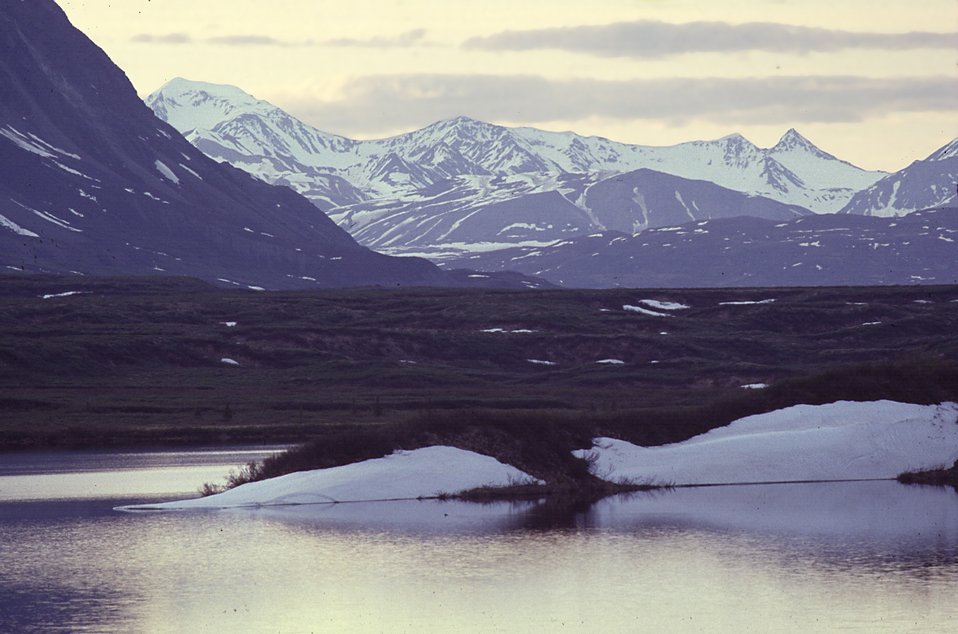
Ice on pond, Denali Highway, Alaska